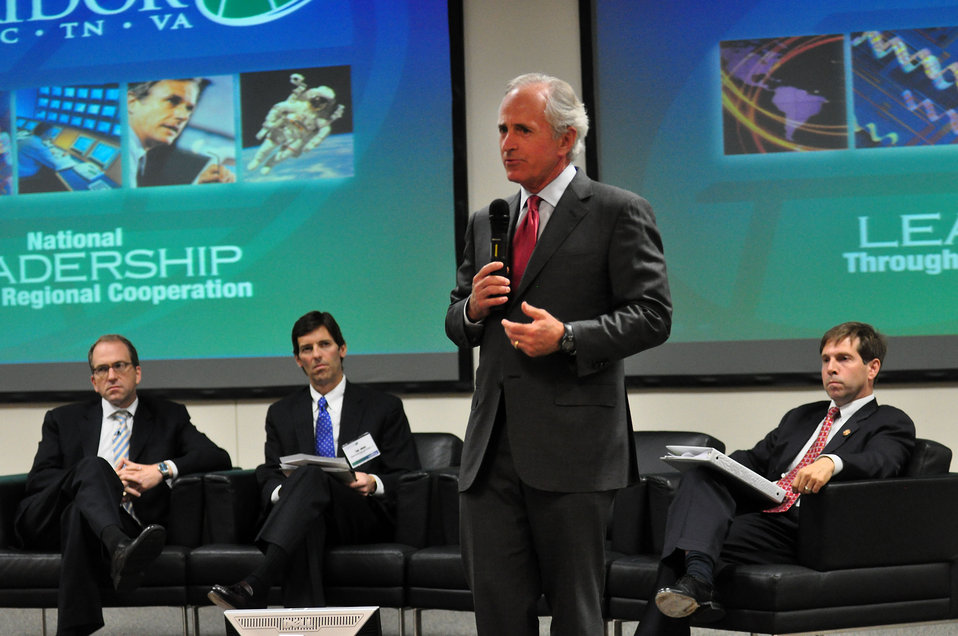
U.S. Senator Bob Corker Tennessee Valley Corridor Summit Oak Ridge

13-062 DOE photo Lynn Freeny 5-29-2013 Oak Ridge Tennessee